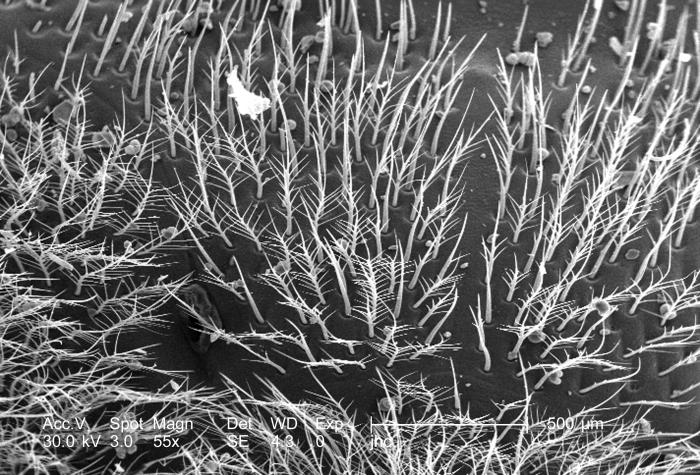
Magnified 55x, this scanning electron micrograph (SEM) depicted some of the ultrastructural morphologic features displayed on the surface of a carpenter bee's, Xylocopa virginica head. This particular bee was found deceased on the grounds of the Decatur, Georgia suburbs, an area where these insects are quite common. Carpenter bees can be quite a nuisance, for they are well known as wood-borers, and can create many unsightly holes in a home's wooden components.